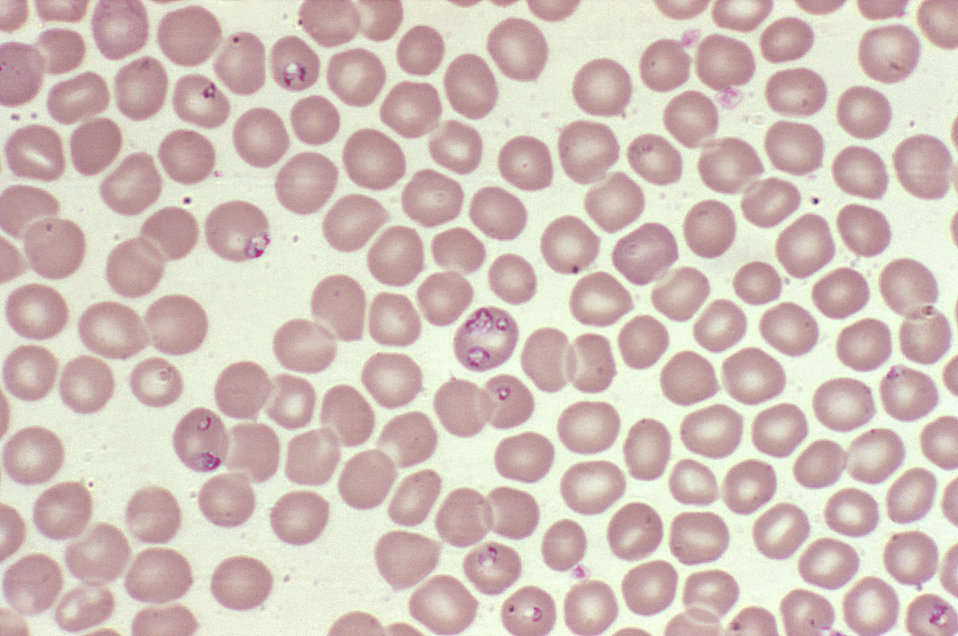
Magnified 1000X, this photomicrograph revealed the presence of a number of developing intraerythrocytic Babesia sp. organisms. These as well as other hemoprotozoan parasites, resemble Plasmodium falciparum organisms, and differentiation between the two takes the trained eye of an experienced microbiologist.